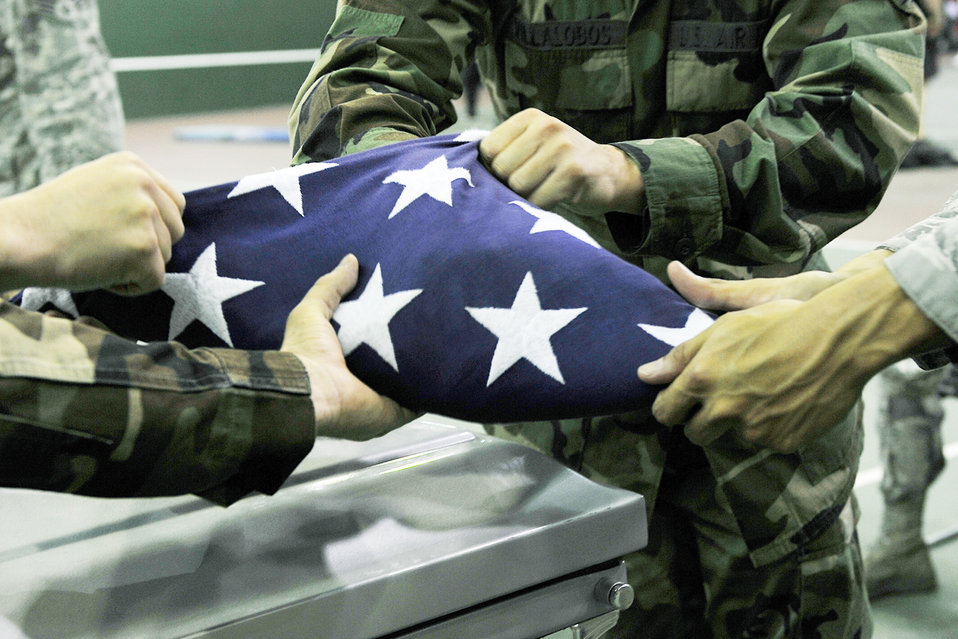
Respect with every fold

Staff Sgts. Aaron Molchak and Shane Flot, practice the ceremonial folding of the flag during a training session Oct. 21, 2009, at Offutt Air Force Base, Neb. Air Force Honor Guard trainers visited the base to evaluate and help sharpen the skills of base honor guard members. Sergeants Molchak and Flot are Offutt AFB honor guard members.